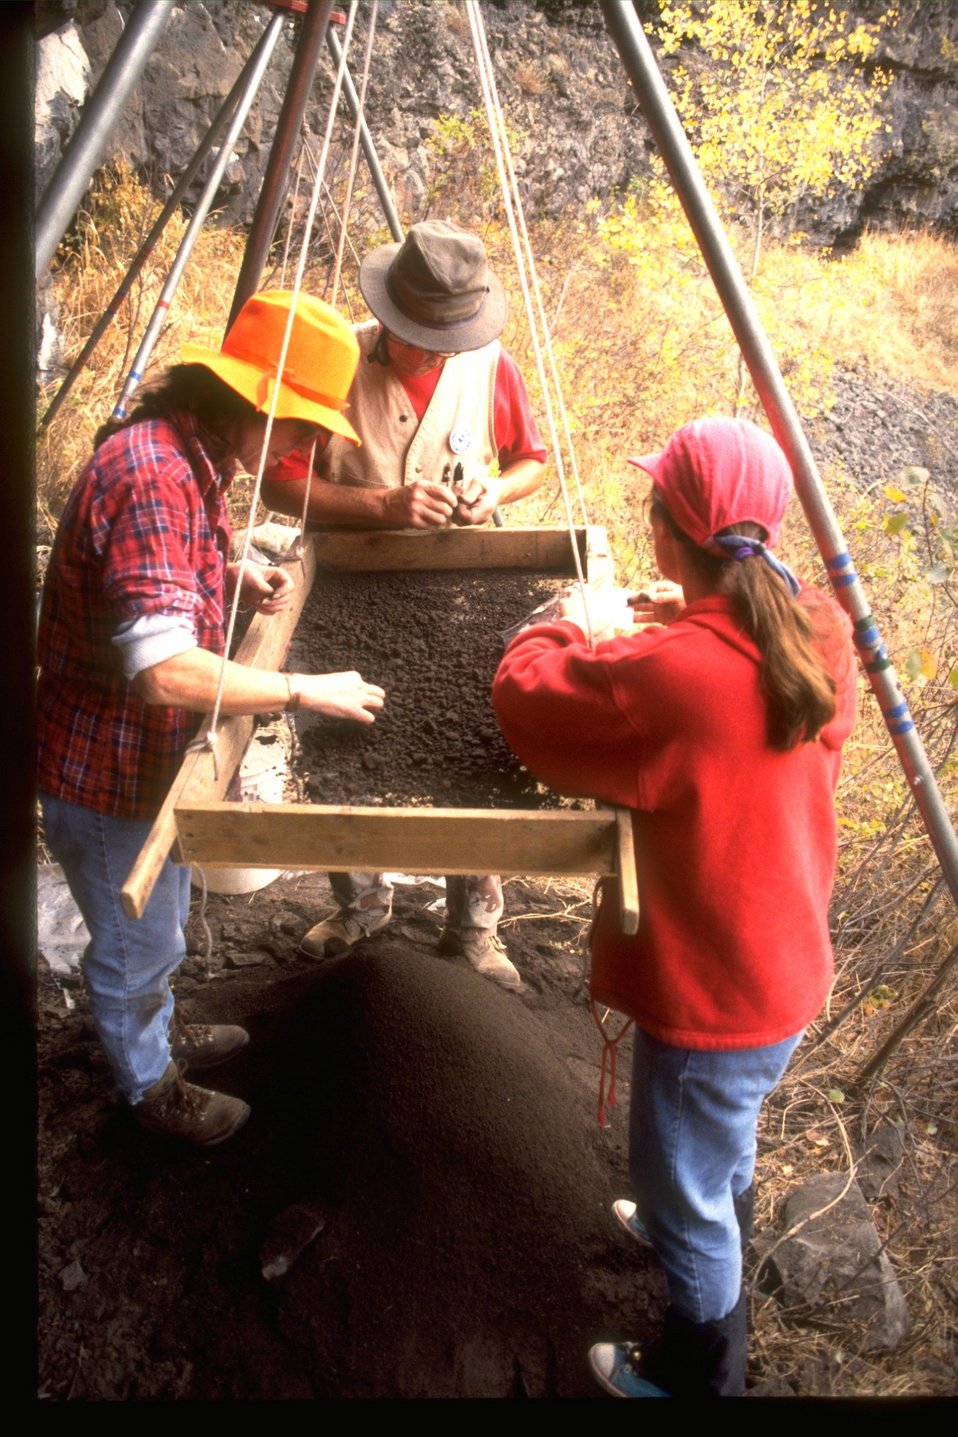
Easter Washington University students sift excavated materials from rock shelter at Fishtrap Management Area, WA.